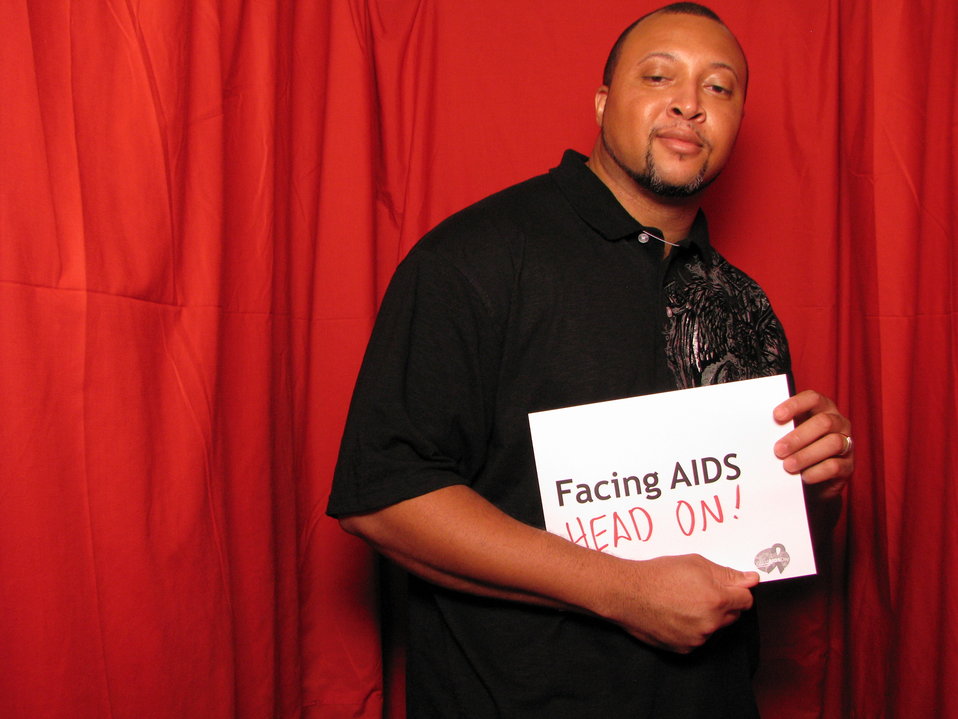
FACING AIDS HEAD ON!

From the AIDS.gov photo booth at the U.S. Conference on AIDS, September 2010 (Orlando, FL).